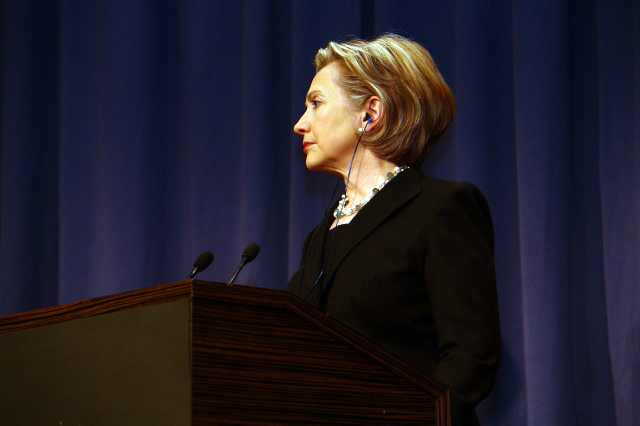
Press Conference With Russian Foreign Minister

Press conference after dinner meeting between U.S. Secretary of State Hillary Rodham Clinton and Russian Foreign Minister Sergey Lavrov in Geneva, Switzerland March 6, 2009.